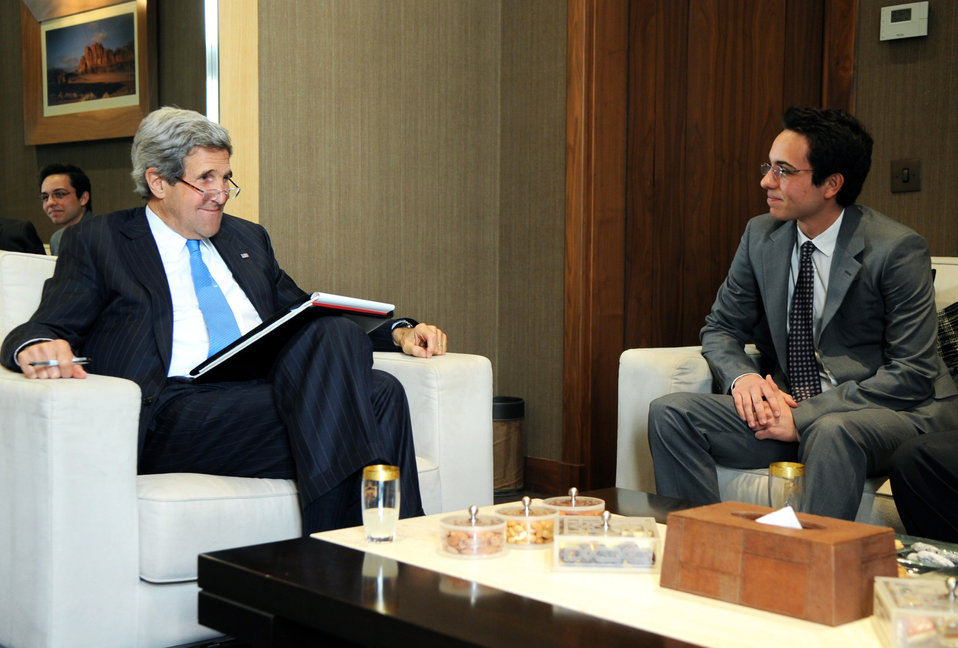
Secretary Kerry Meets With Crown Prince Hussein bin Abdullah

U.S. Secretary of State John Kerry meets with Crown Prince Hussein bin Abdullah before his meeting with King Abdullah II at Al Hummar Palace in Amman, Jordan, on May 22, 2013.